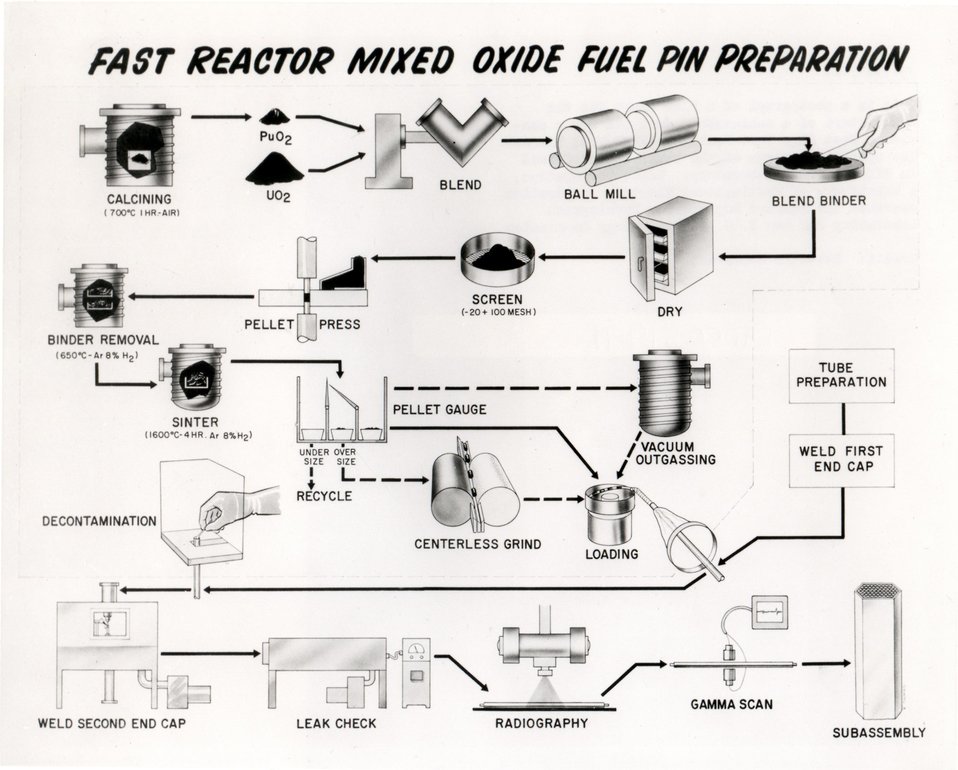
This is a photograph of a flow chart for the manufacture of a sub assembly fuel pin for a candidate Fast Flux Test Facility (FFTF) Fuel Element. The operations shown on the chart are performed in WADCO's Fuels Laboratory. WADCO Corporation, a subsidiary of Westinghouse Electrical Corporation, operated the Hanford Engineering Development Laboratory for the U.S. Atomic Energy Commission. c. 1971